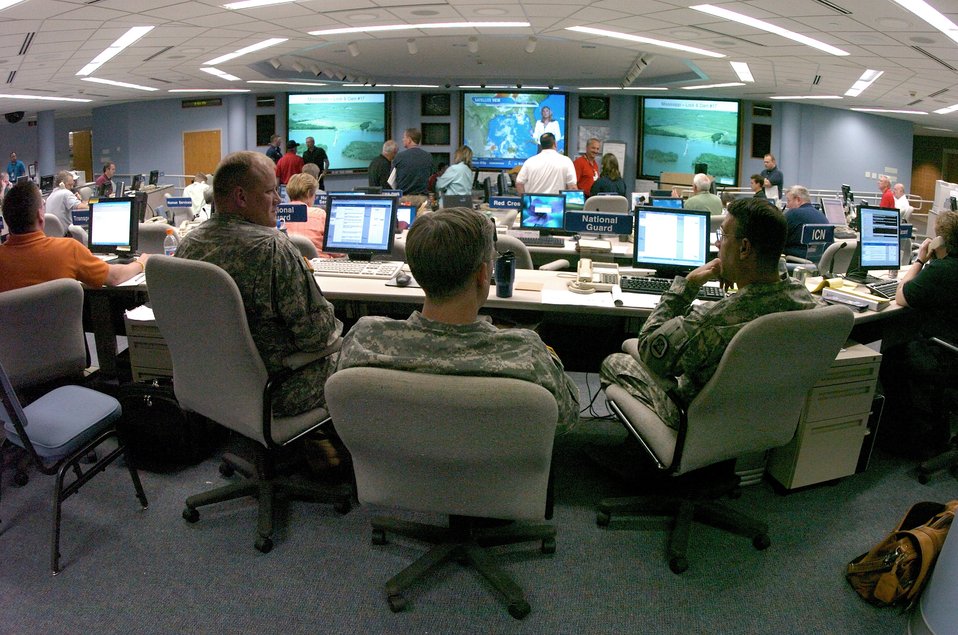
Air, Army National Guard battle floods in Iowa

Air and Army National Guard members and Iowa state officials make sure flood tasking are fed through the proper channels June 14 at the Iowa National Guard Headquarters in Camp Dodge, Iowa. More than 2,500 National Guard Soldiers and Airmen are currently activated for flood-response operations in Iowa.